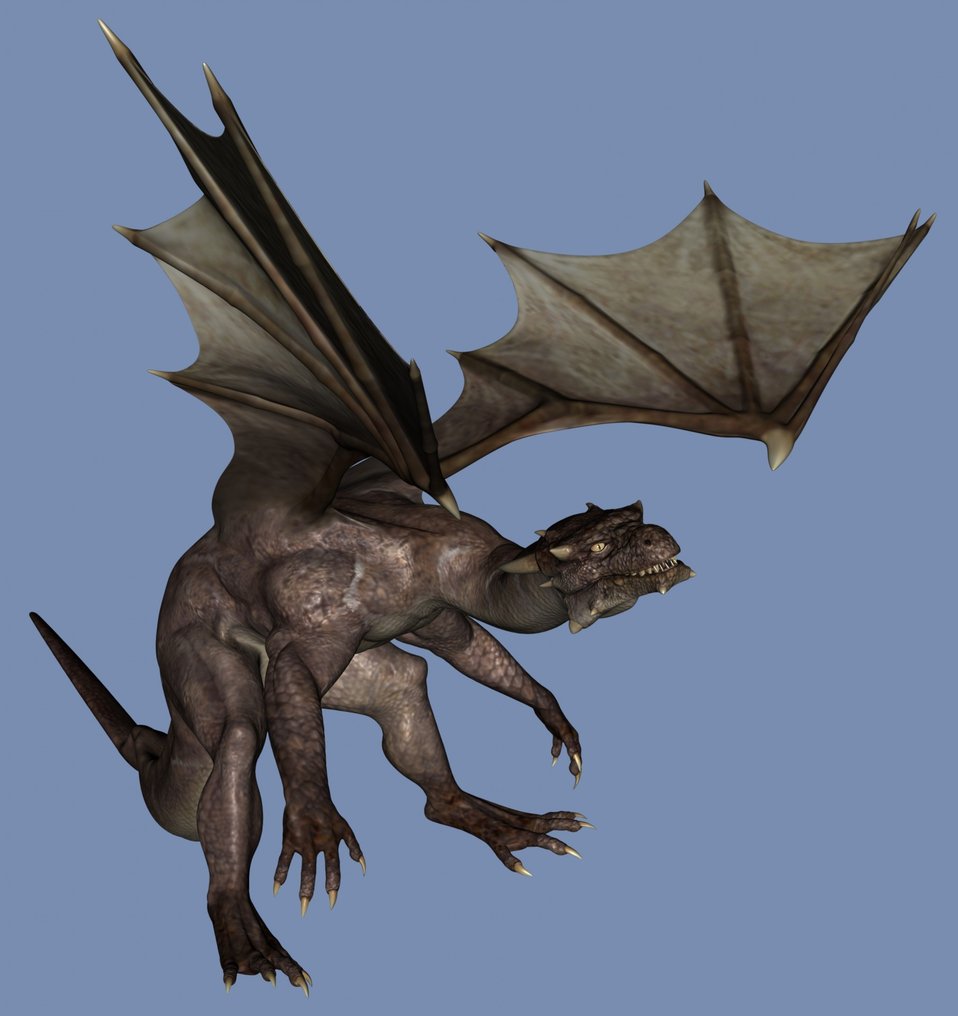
Grey dragon flying in 3d.